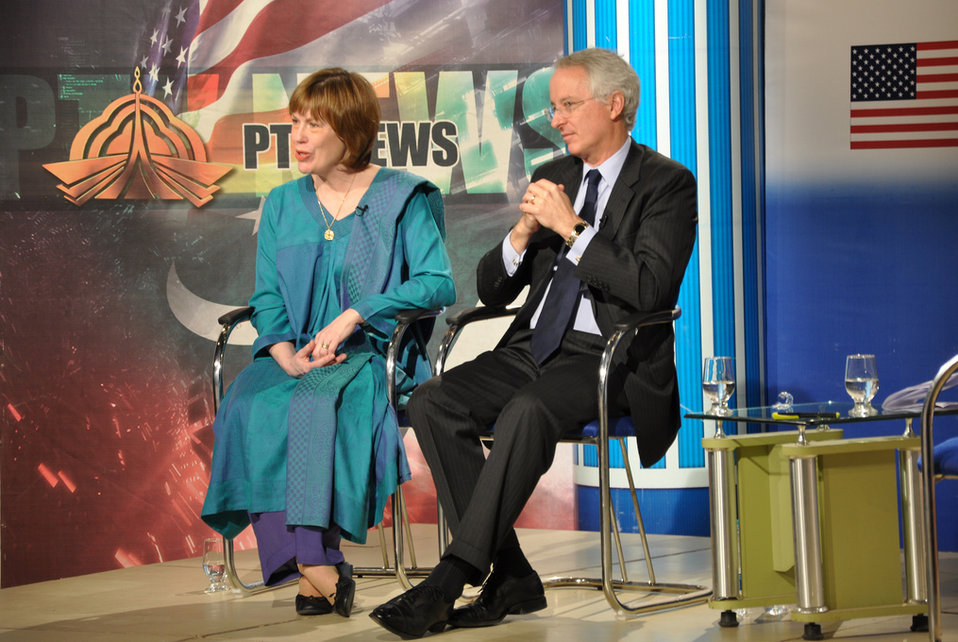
USAID’s Merit-and Needs-based Scholarship Program

Islamabad, January 25, 2011 - U.S. Ambassador Cameron Munter and his wife, Dr. Marilyn Wyatt at PTV during their conversation with students who are recipients of USAID’s Merit-and Needs-based Scholarship Program.